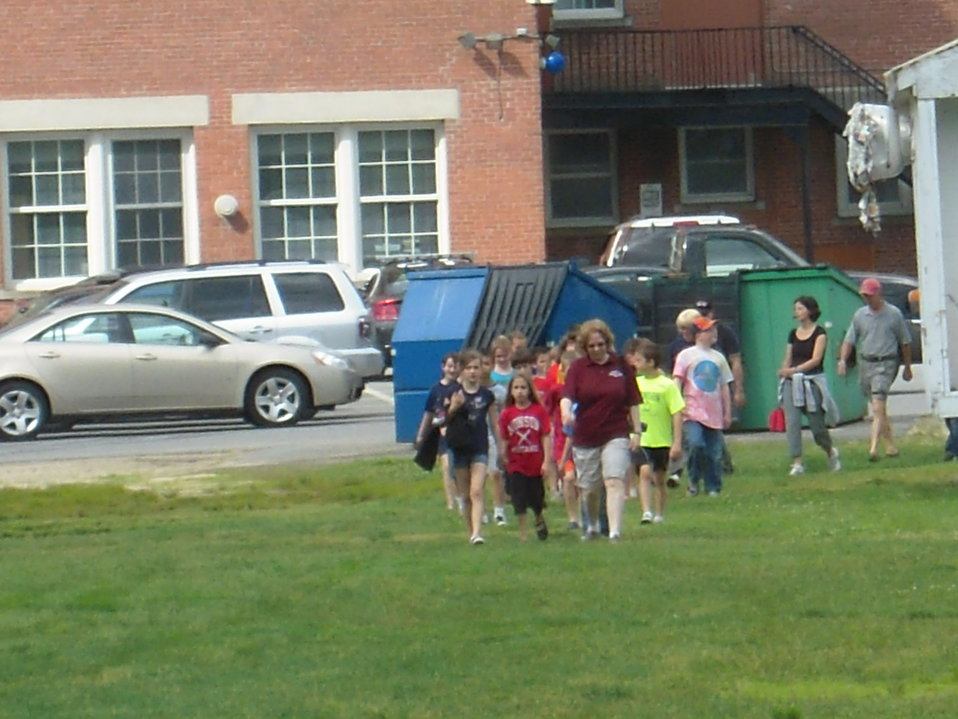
Kids arrive at local stream